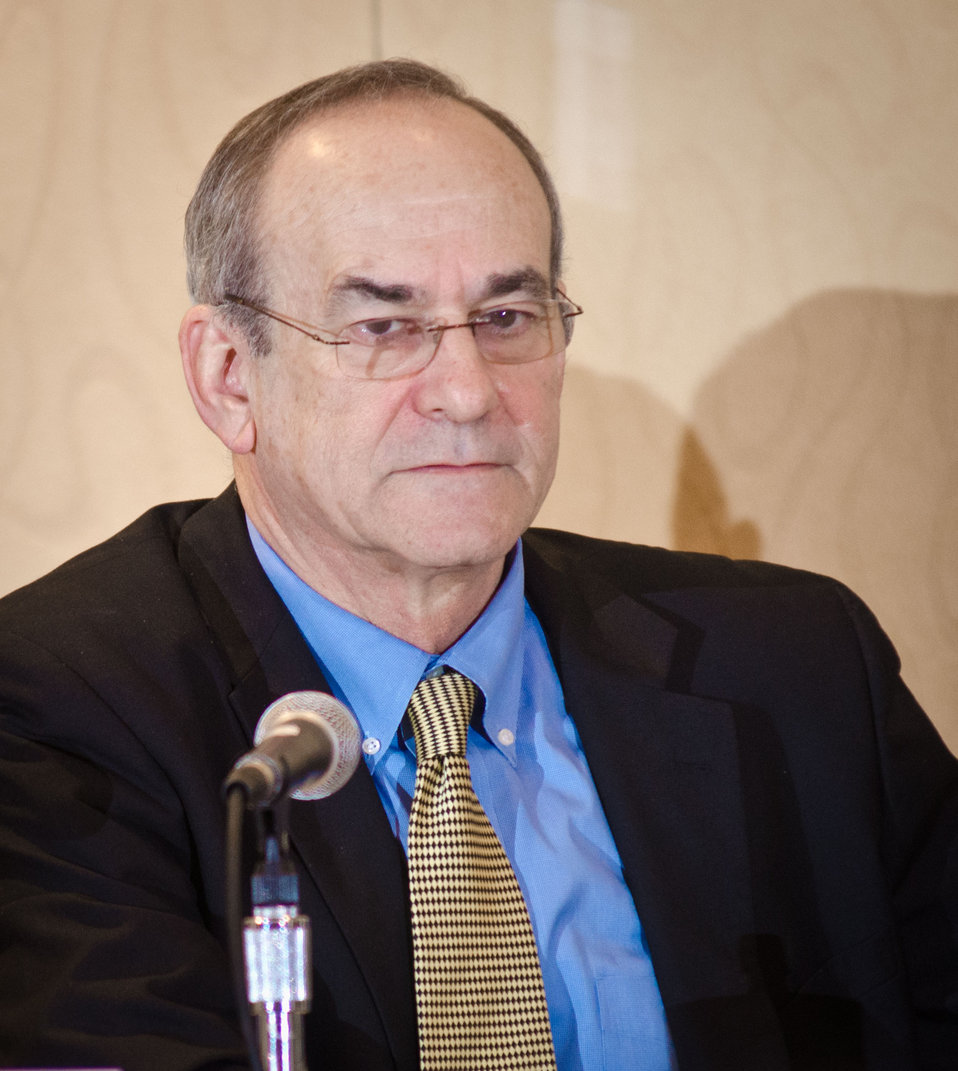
National Rural Water Association Deputy CEO Sam Wade, talked about 'Funding and Sustainability: Who is Investing in Rural Water Infrastructure?' during the Rural Development session on “Why Every American Should Care About the Future of Rural Water,” at the 2012 Agricultural Outlook Forum, “Moving Agriculture Forward, Growing, Innovating and Celebrating 150 Years” held at the Crystal Gateway Marriott Hotel, Arlington, Virginia, on Friday, February 24, 2012. This year’s forum coincides with the 150th anniversary of the Department of Agriculture addressing economics, marketing, research, food safety, nutrition, conservation, rural development, alternative energy, trade and many other agricultural issues.